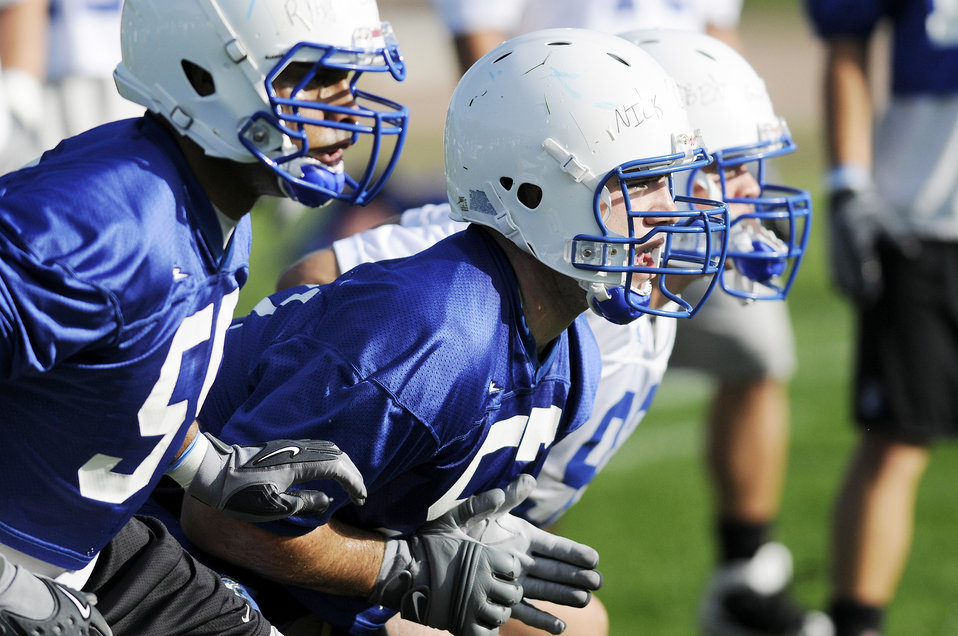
Academy football drills

During football practice Aug. 4, Air Force Academy senior offensive linesman Nick Charles leads a trio of blockers at the Academy practice field near Colorado Springs, Colo. Charles was recently named a preseason first-team all-Mountain West Conference selection.